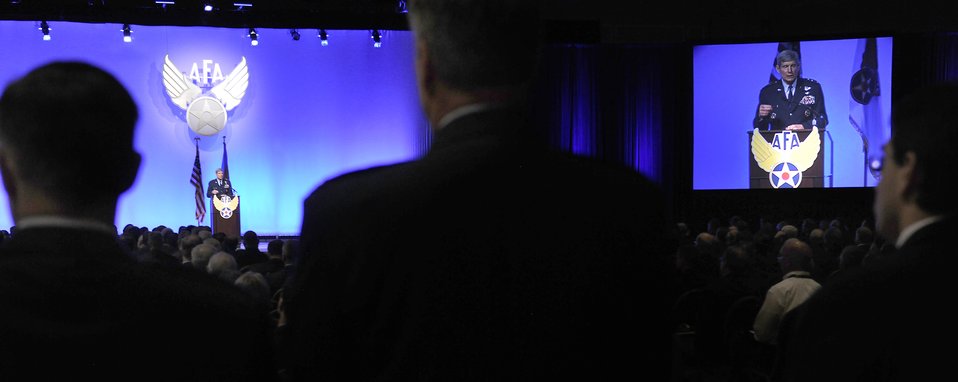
CSAF's AFA Kick-Off Speech

Air Force Chief of Staff Gen. Norton Schwartz addresses attendees Feb. 23, 2012, during the Air Force Association's 2012 Air Warfare Symposium and Technology Exposition in Orlando, Fla. He told the audience the Air Force will maintain its readiness despite the austere fiscal environment.